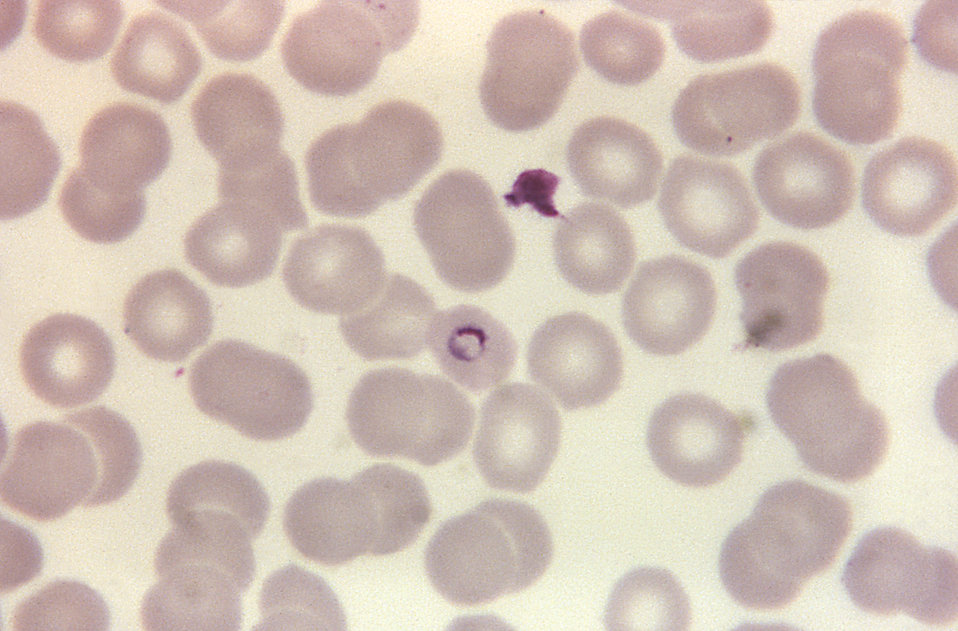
This thin film photomicrograph depicts a Plasmodium malariae ring using Giemsa stain; Magnified 1125X.